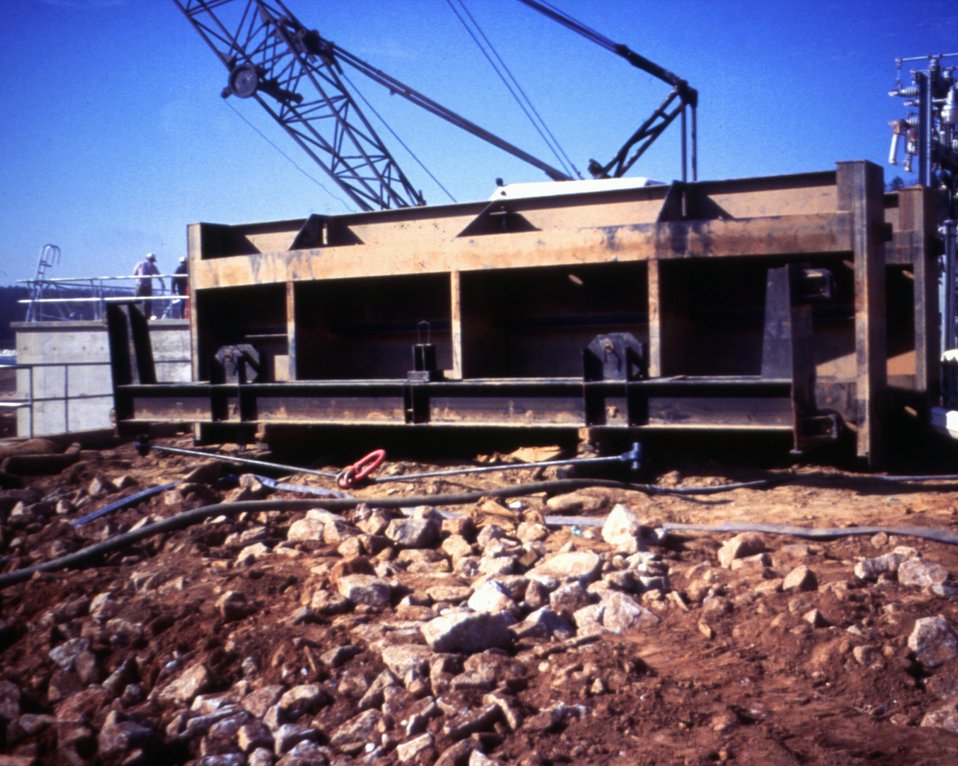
TAILRACE GATE FRAME.

THE DOE SMALL-SCALE HYDROPOWER PROGRAM CONSISTS OF 19 PROJECTS AND DEMONSTRATES THE VIABILITY OF SMALL-SCALE HYDRO-POWER WITH AVAILABLE TECHNOLOGY. THE BROAD RIVER PROJECT, BEGUN IN JANUARY, 1983, WENT ON LINE DECEMBER 27, 1987. UTILIZING ONE OPEN-PIT TUBULAR TURBINE THAT PRODUCES A MAXIMUM OF 4,140 KILOWATTS, THE DAM PROVIDES A GROSS HEAD OF 20.2 FEET WITH AN ANNUAL STREAM FLOW OF 2,472 CFS.